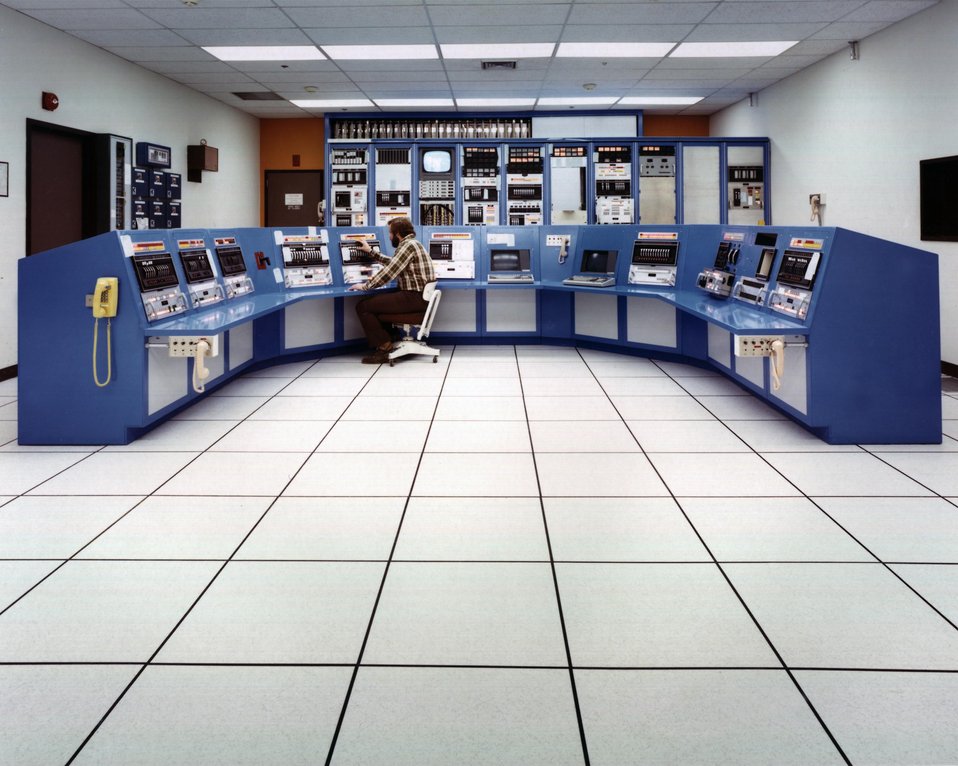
THE C.D.I.F. CENTRAL CONTROL ROOM.

AUTHORIZED AS A TEST FACILITY TO STUDY MAGNETOHYDRODYNAMICS (MHD) AS A METHOD OF PRODUCING ELECTRICITY, THE C.D.I.F. IS DESIGNED TO TEST ALL MAJOR COMPONENTS AND SUBSYSTEMS RELATED TO THE MHD PROCESS. THE C.D.I.F. WILL BEGIN TESTING AT THE 50 MWT LEVEL BUT WILL LATER EXPAND TO THE 100 MWT LEVEL. THE MHD TESTING BEGAN DECEMBER 3, 1980. MOST SUPPORT SYSTEMS ARE STARTED FROM LOCAL CONTROL PANELS AND THEN SWITCHED TO THIS CENTRAL CONTROL ROOM.